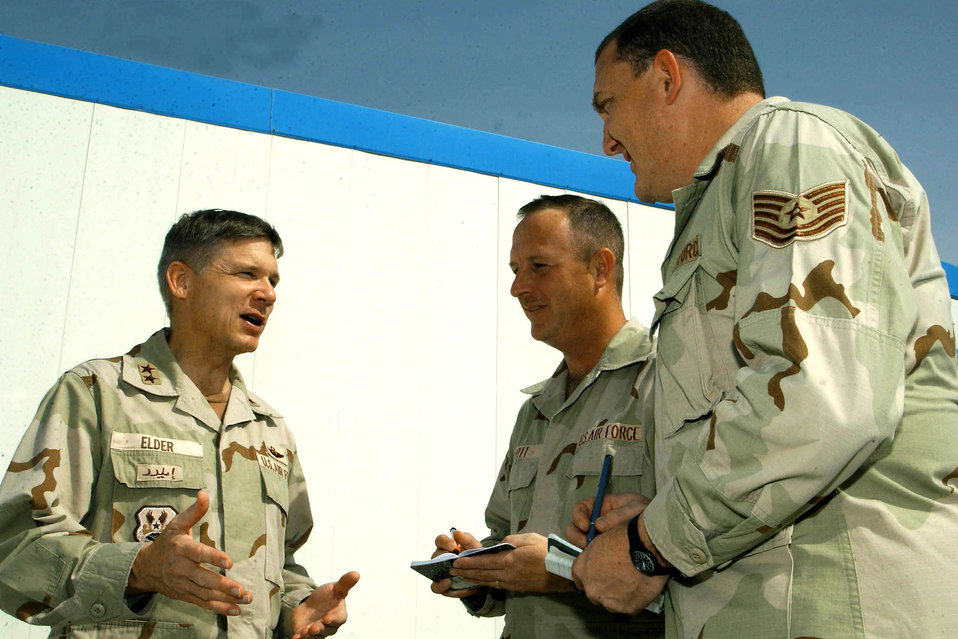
CAOC historians perserve past for the future

AL UDEID AIR BASE, Qatar -- Maj. Gen. Robert Elder discusses current operations with Master Sgt. Paul Witt and Tech. Sgt. Jason Axberg, historians at the Combined Air Operations Center here. The historians use interviews to collect and archive information about air operations in the U.S. Central Command area of responsibility. General Elder is the deputy commander of the Combined Forces Air Component.